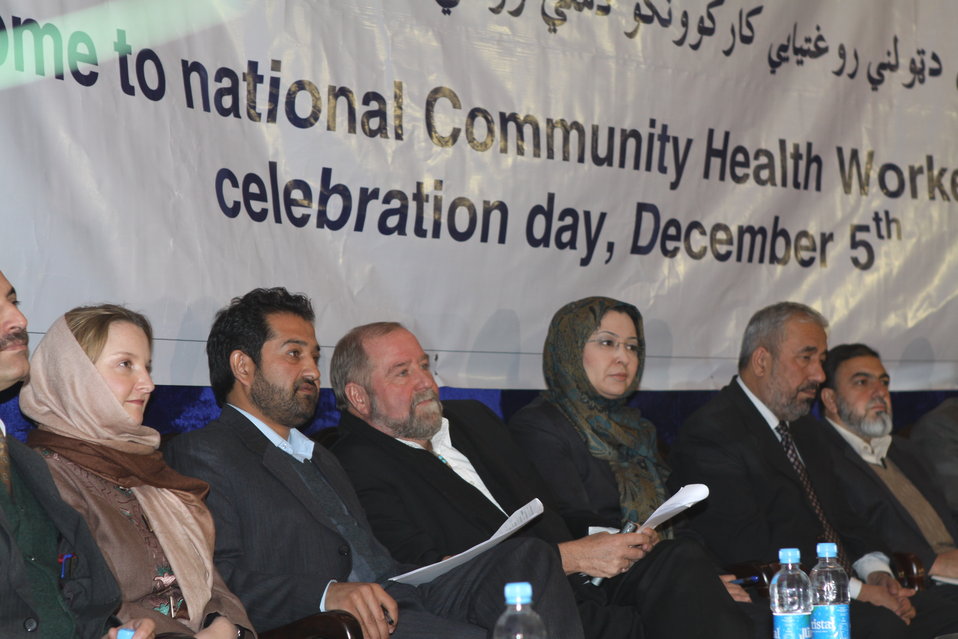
Community Health Workers Celebrated

Kabul, Afghanistan | December 5, 2010 — In support of the United Nations designated International Volunteer Day for Economic and Social Development, Afghanistan’s Ministry of Public Health celebrated its annual Community Health Worker Day today. Acting Minister of Public Health Dr. Suraya Dalil, USAID Senior Deputy Mission Director Robert Hellyer, other government officials, and international donors joined in recognizing the critical contribution of community health workers in Afghanistan and encouraging them to continue their voluntary support to their communities.
The event praised the contributions of the more than 22,000 volunteers throughout the country who deliver community level health-education, counseling, and services out of village health posts located in private homes. The Ministry of Public Health envisioned that community-based healthcare programs will actively encourage communities and families to adopt healthy lifestyles and behaviors, and provide families access to high quality and socially acceptable preventative medicine and life-saving services.
“We have 22,000 community health workers in Afghanistan that are able to implement the basic and standard medicines. They all have been trained through a job description,” said Minister Dalil. Addressing the health workers, she added, “I am proud and feel powerful that I have people like you.”
USAID-funded health projects collaborate closely with the Ministry of Public Health to improve the health and nutritional status of Afghans, provide quality primary healthcare, and promote healthy behaviors at the community and household-levels. USAID supported the training of more than 9,000 of the volunteer community health workers currently working in Afghanistan.
“On behalf of the American people, I congratulate the Community Health Workers for their diligence to gain the skills and knowledge necessary to serve their communities in this important role,” said USAID Senior Deputy Mission Director Hellyer. “USAID strongly supports community based health care and believes that quality community-based health services are essential to reaching Afghanistan’s Millennium Development Goals.”
To support the Basic Package of Health Services, USAID assisted in developing the community health worker training manual, helped train community health worker supervisors and master-trainers, facilitated in-service training, and produced and developed reporting tools, job aids, and education materials.